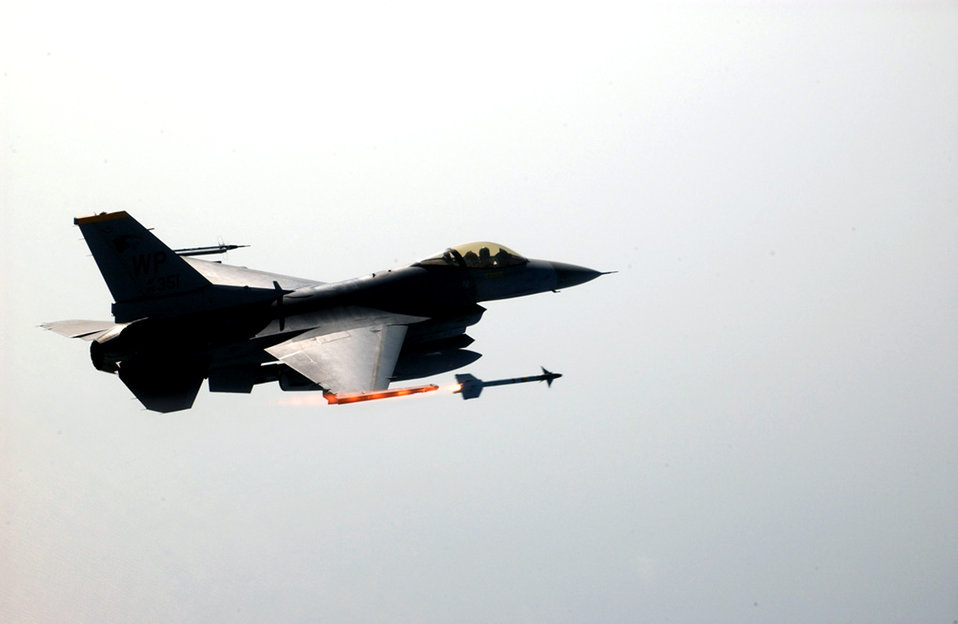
Live air-to-air missiles fired first time in Korea

An F-16 Fighting Falcon pilot fires one of the first air-to-air missiles launched by a South Korean-based F-16 on Aug. 16. The live fire is part of a process for implementing a weapon system evaluation program for jets assigned to Kunsan Air Base, Korea.